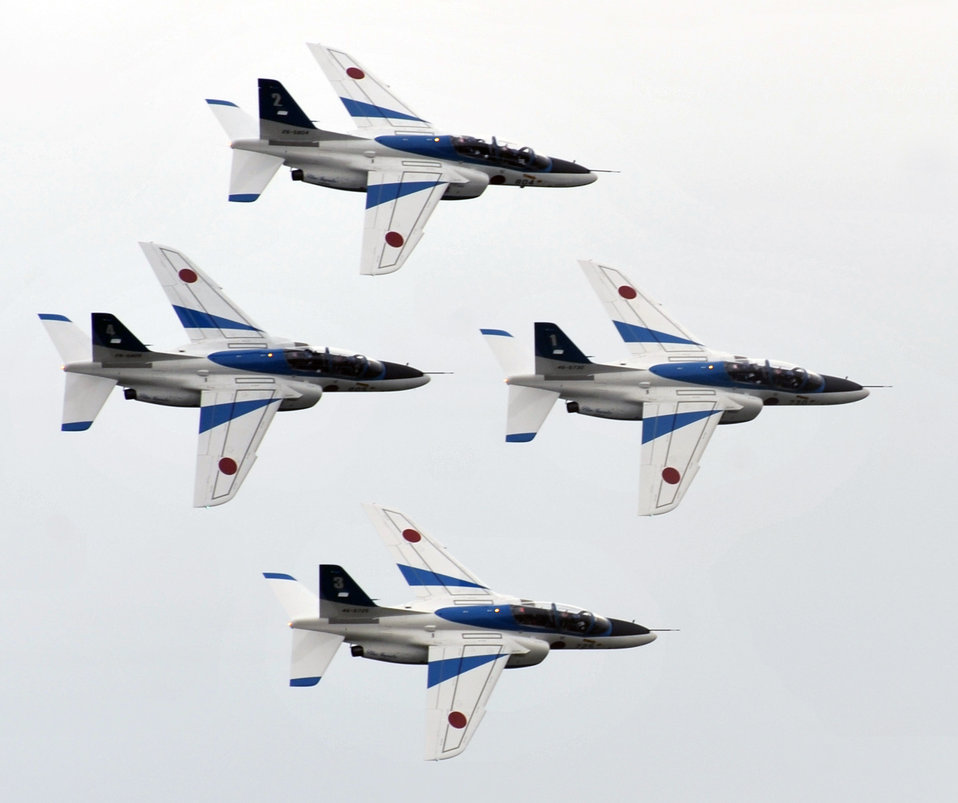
Misawa Air Festival

The Japan Air Self-Defense Force Blue Impulse aerial demonstration team flies in formation during the Misawa Air Festival Sept. 19, 2010, at Misawa Air Base, Japan.